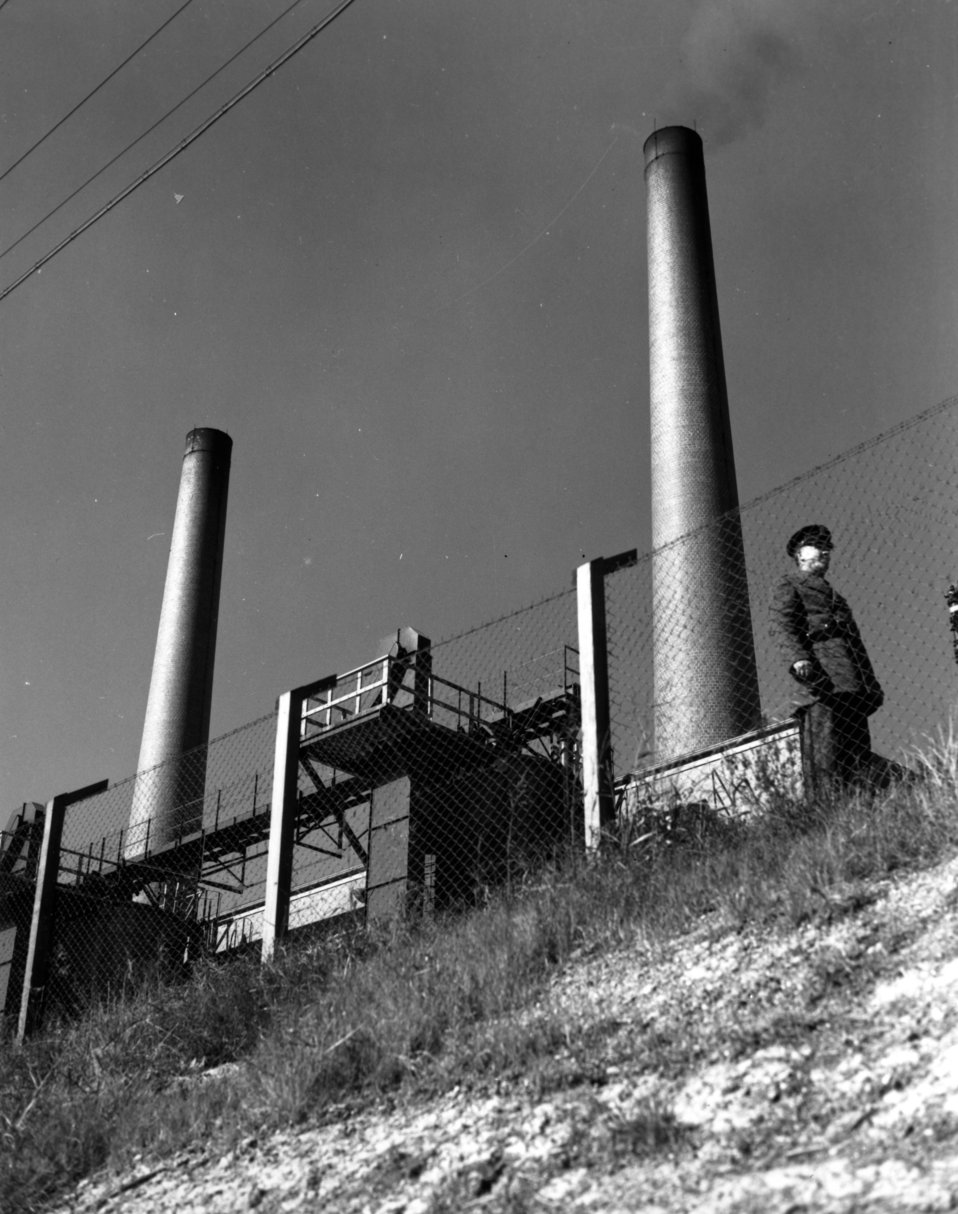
Security at Oak Ridge